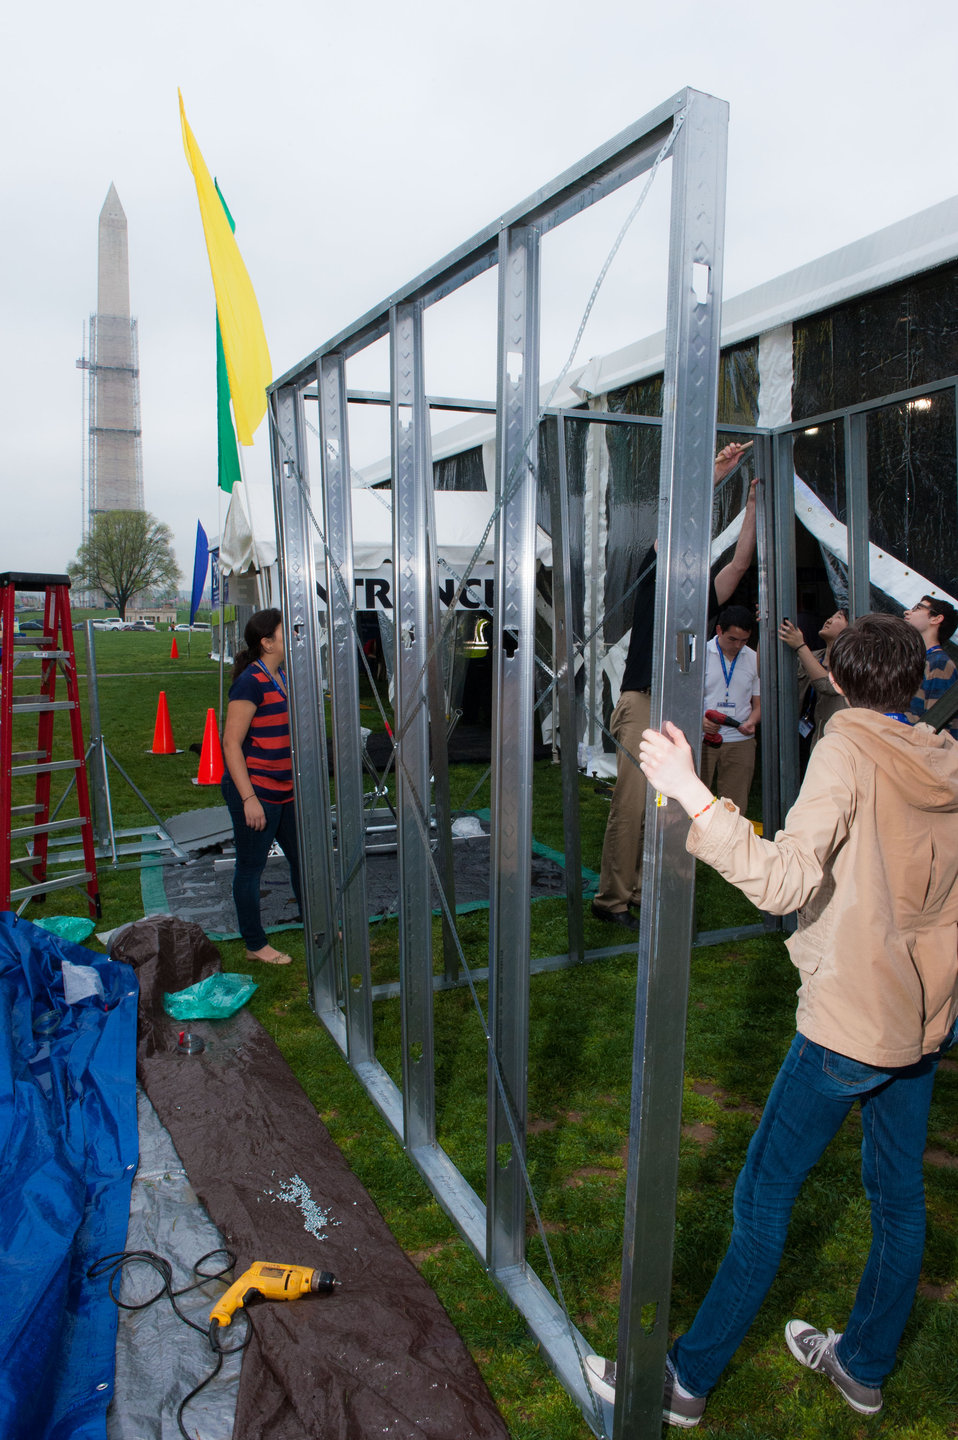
April 18, 2013 - P3 Design Expo, Cornell University - Sunn

Cornell University - Sunn Hybrid Indoor Lighting.

Cornell University students are designing, building, and testing a new kind of light fixture that couples fiber optics with LED lights to bring optimal sunlight to interior spaces.

Cornell Sunn P3 page
Cornell Sunn Team’s Facbook page

People Prosperity and the Planet: National Sustainable Design Expo on the National Mall 18-19 April 2013